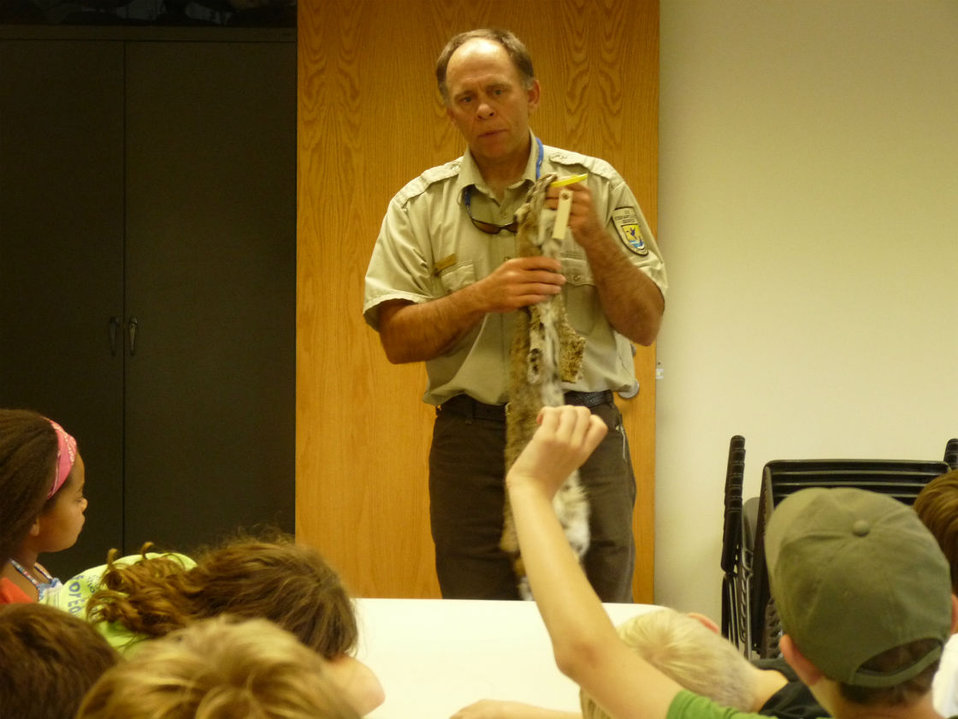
Refuge Manager Walt Ford teaches about Bobcats

Refuge manager Walt Ford answers questions about the elusive bobcat.